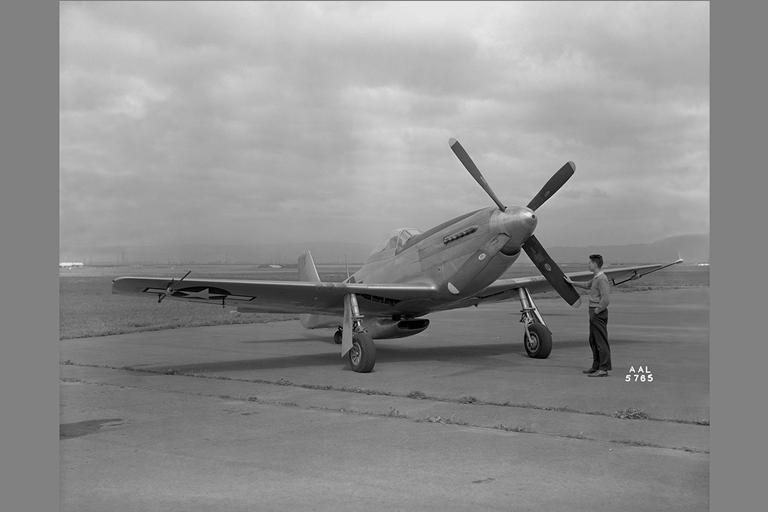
P-51D Mustang

The P-51 Mustang provided high-altitude escort to B-17s and B-24s. They scored heavily over German interceptors and by war's end, P-51s had destroyed 4,950 enemy aircraft in the air, more than any other fighter.